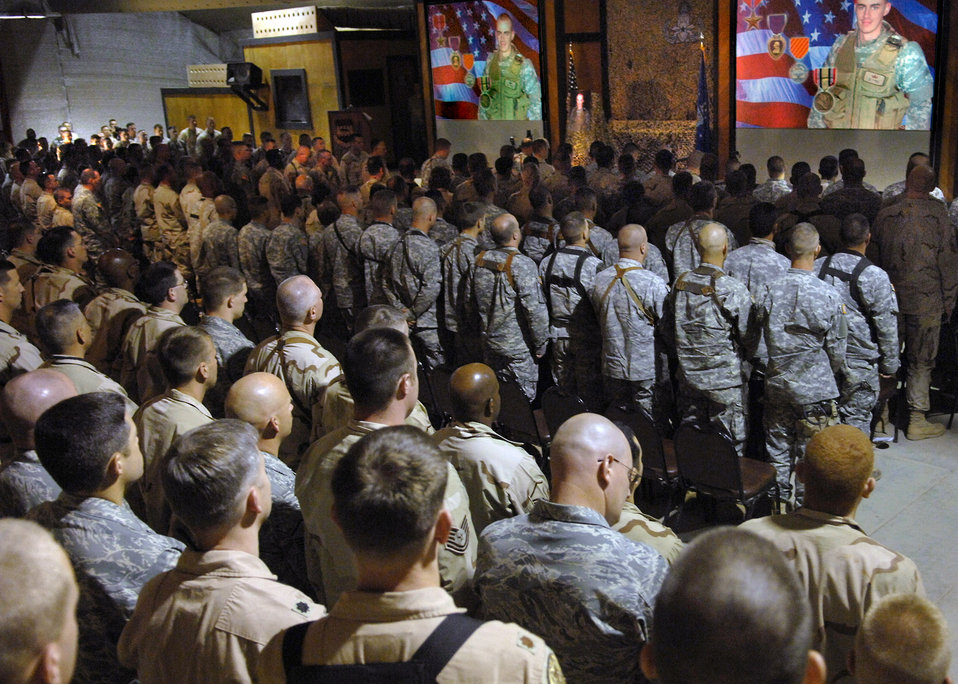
Balad honors fallen EOD Airman

Members of Balad Air Base, Iraq, and Anaconda Base gather for the memorial service for Senior Airman William N. Newman June 10.